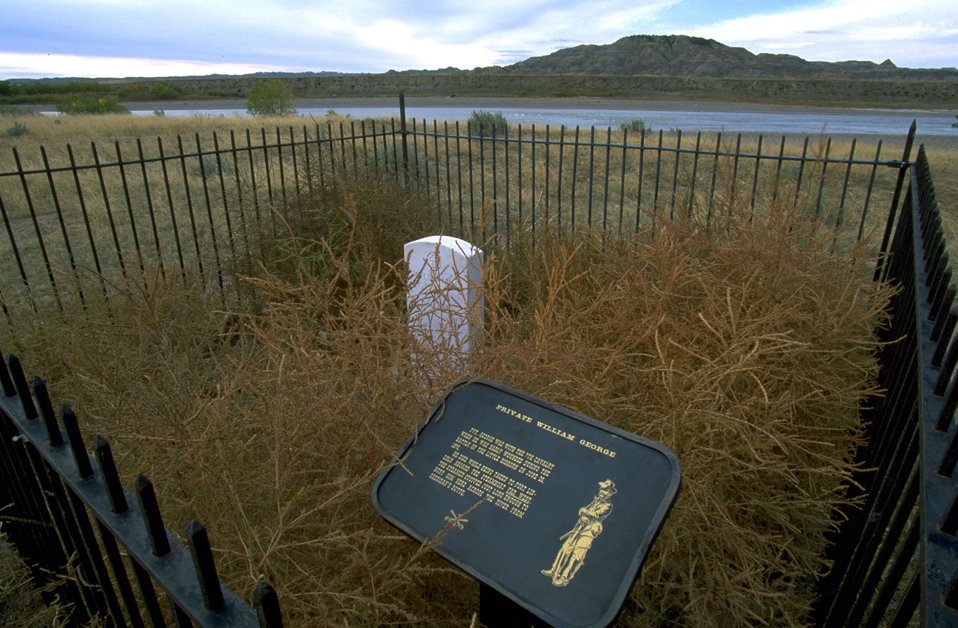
Headstone and plaque of William George of Custer's 7th Cavalry, Powder River Depot